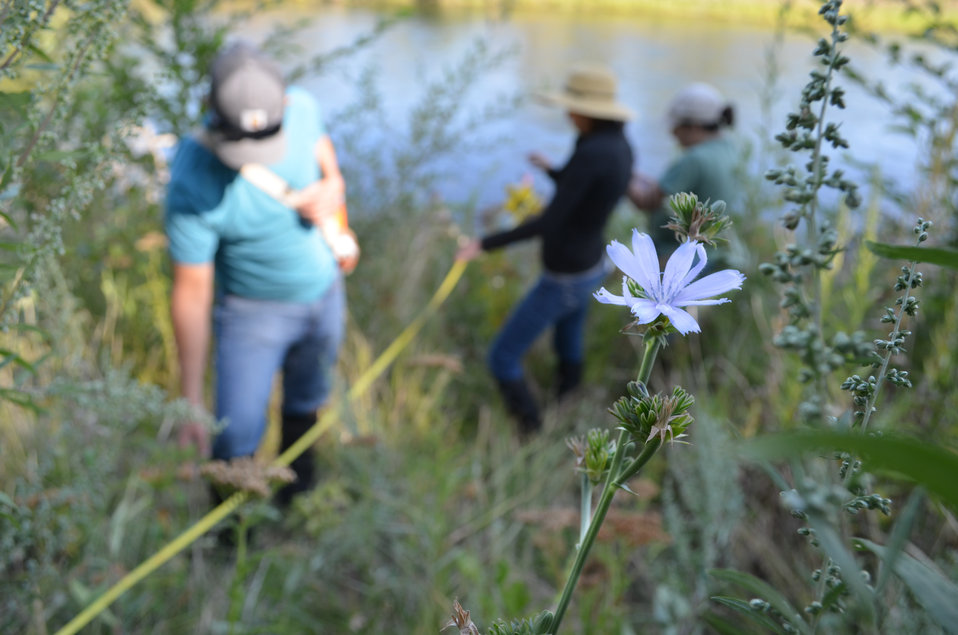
Environmental managers survey last year's riverbank plantings

Environmental managers with the U.S. Army Corps of Engineers Sacramento District, (from left) Mike Fong, Natalie Houghton-McNair and Stefanie Adams survey plantings along the lower American River in Sacramento, Calif., July 31, 2013. After repairing riverbank erosion in 2012, the Corps planted native grasses and shrubs to return the site to its natural condition. The work is part of the Corps’ Sacramento River Bank Protection project, and is designed to reestablish riverbank habitat function for endangered fish like salmon and steelhead trout.